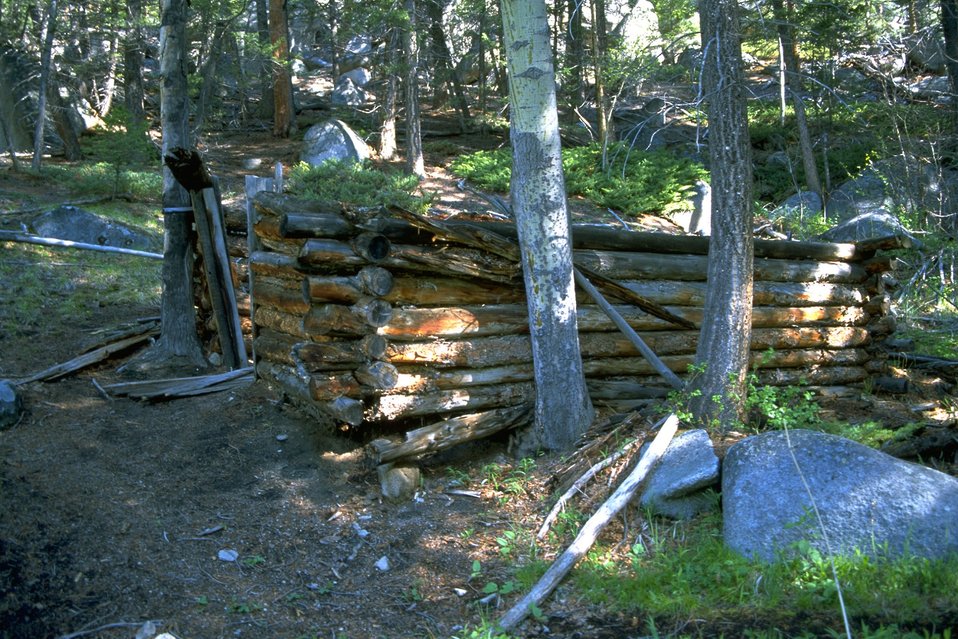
Remains of a log cabin in the Humbug Spires Wilderness Study Area